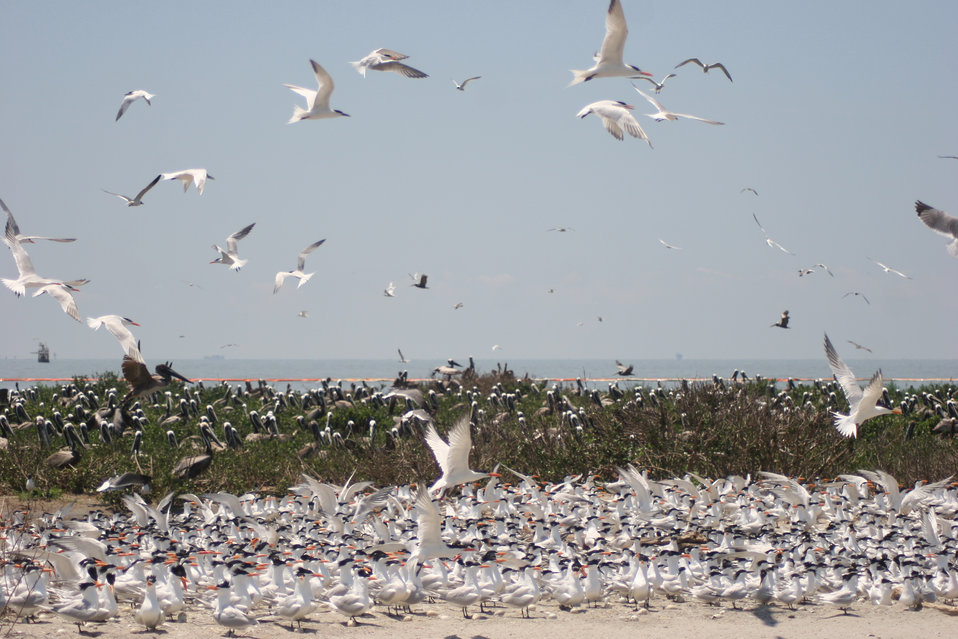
royal terns and pelicans

Breton Island National Wildlife Refuge, LA
May 20, 2010
Photo: Greg Thompson, USFWS
USFWS employees and volunteers protected these royal terns, pelicans and other wildlife from the effects of the 2010 Deepwater Horizon oil spill. Breton Island was the second national wildlife refuge created by Pres. Teddy Roosevelt in 1904.